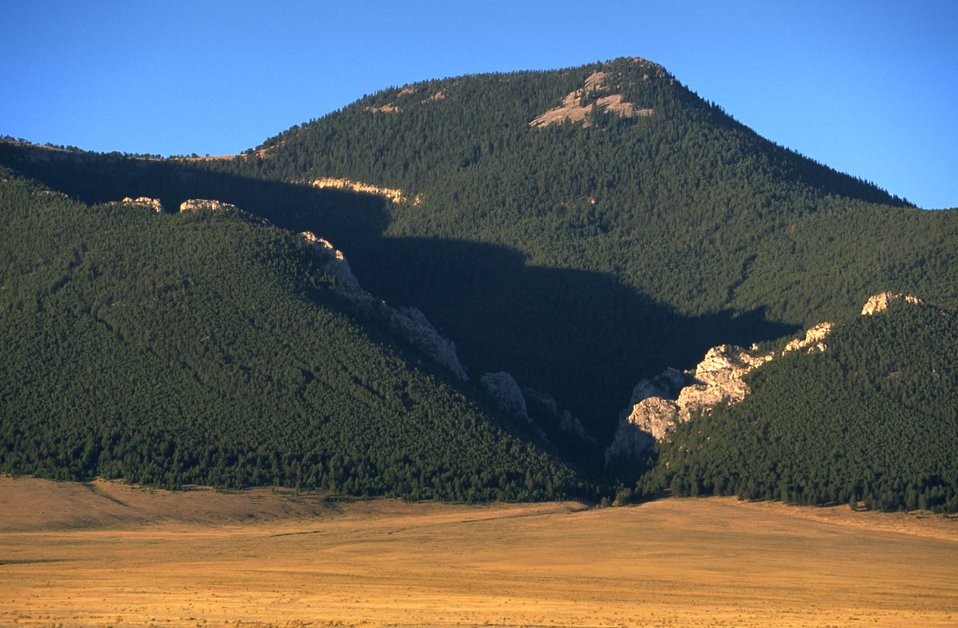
Grassy slopes leading to forested mountains